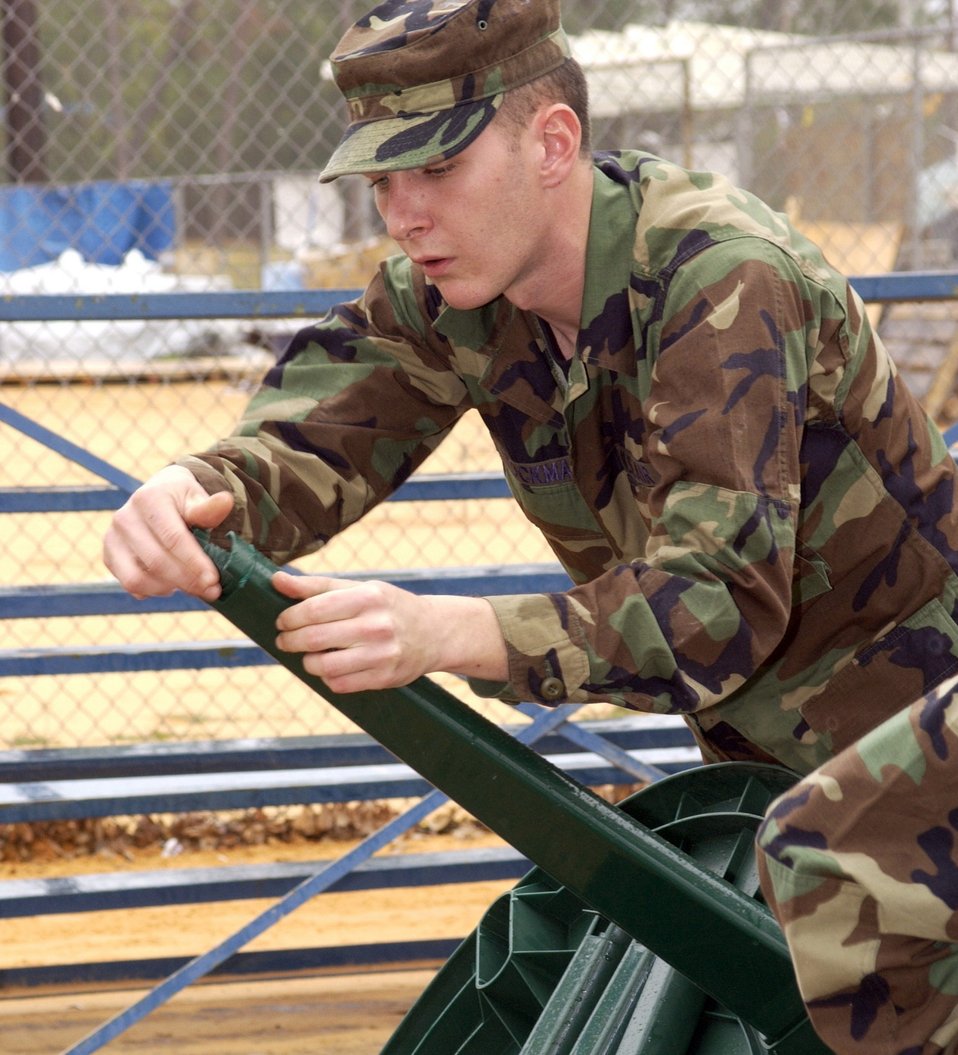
A helping hand

KEESLER AIR FORCE BASE, Miss. (AFPN) -- Airman Basic Kyle Stockman assembles a table at Rudy Moran Park in D'Iberville, Miss. People who lost their homes to Hurricane Katrina are living in tents at the park. Airman Stockman is with the 336th Training Squadron,